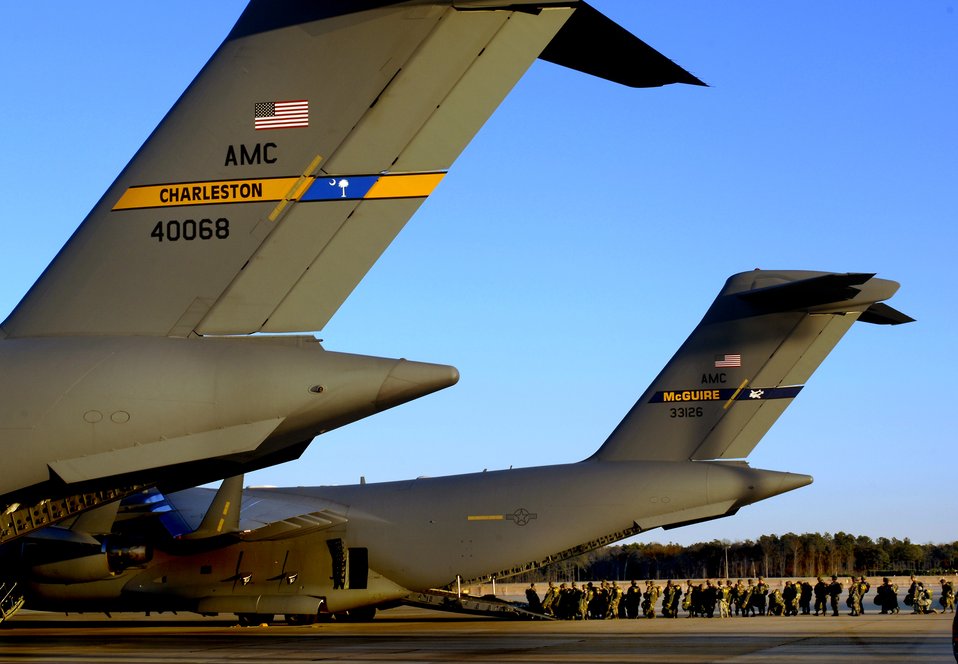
Joint forcible entry exercise

POPE AIR FORCE BASE, N.C. (AFPN) -- Army paratroopers from the 82nd Airborne Division, Fort Bragg, N.C., board a C-17 Globemaster III here. They were jumping into a dropzone as part of a joint forcible entry exercise Jan. 25.